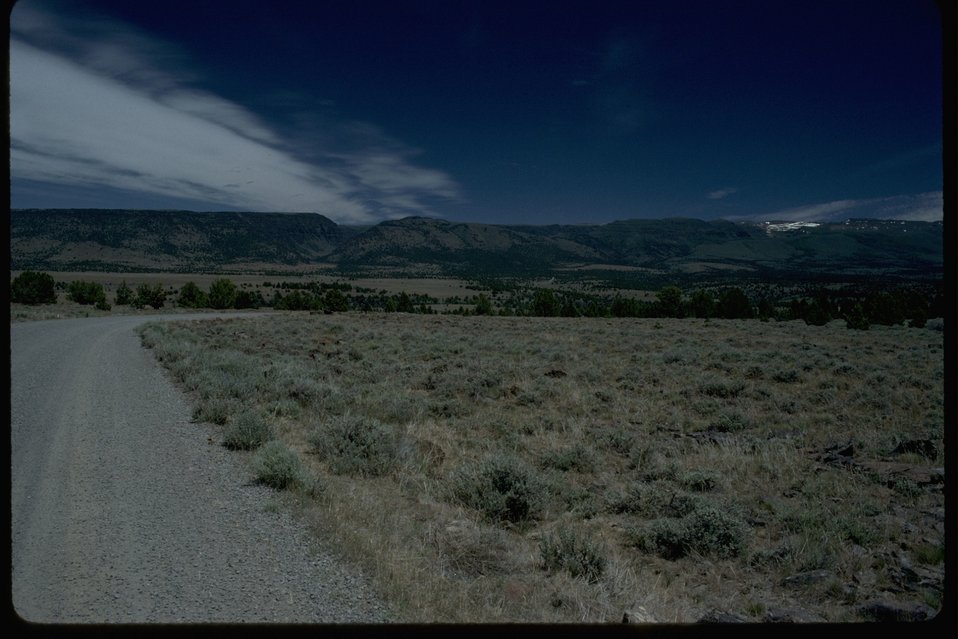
Approaching the west side of Steens Mountain on the south segment of the Steens Back Country Byway.